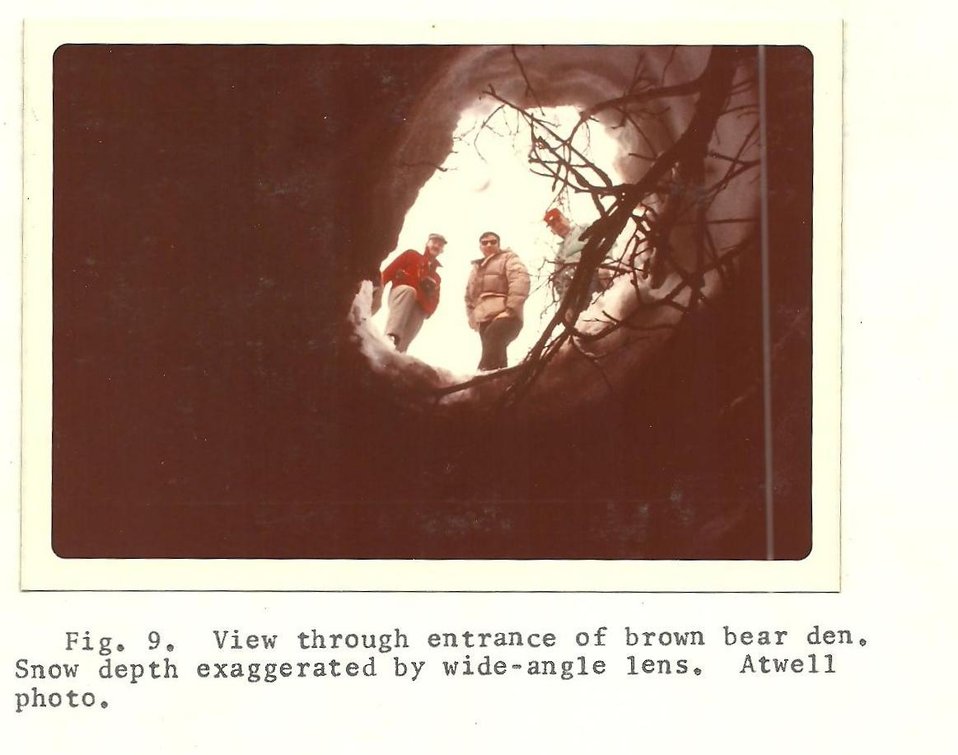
(1974) Brown Bear Den

Credit: USFWS

Source and Contact: Kodiak National Wildlife Refuge